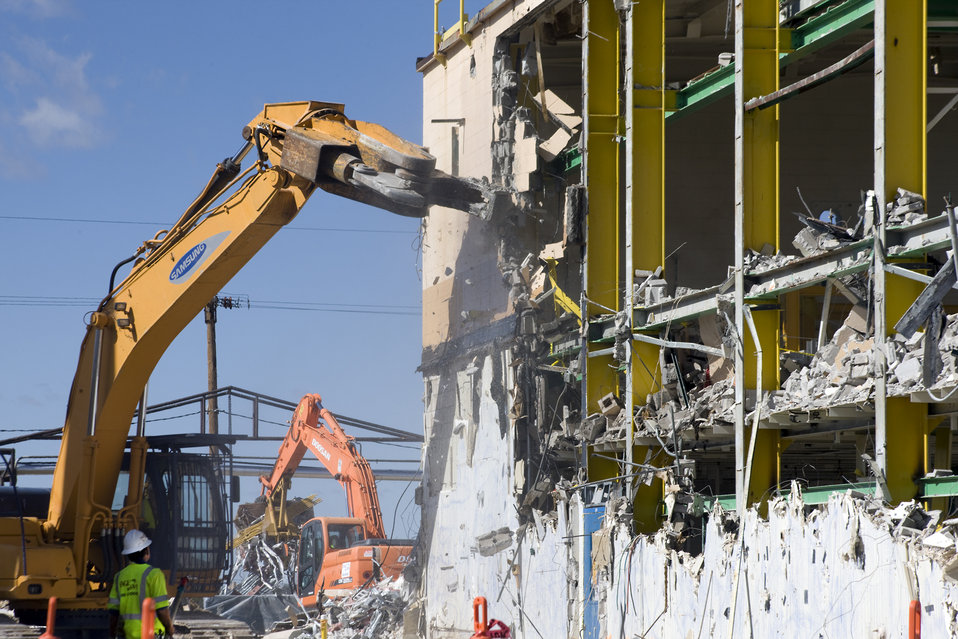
Los Alamos Demolition Work